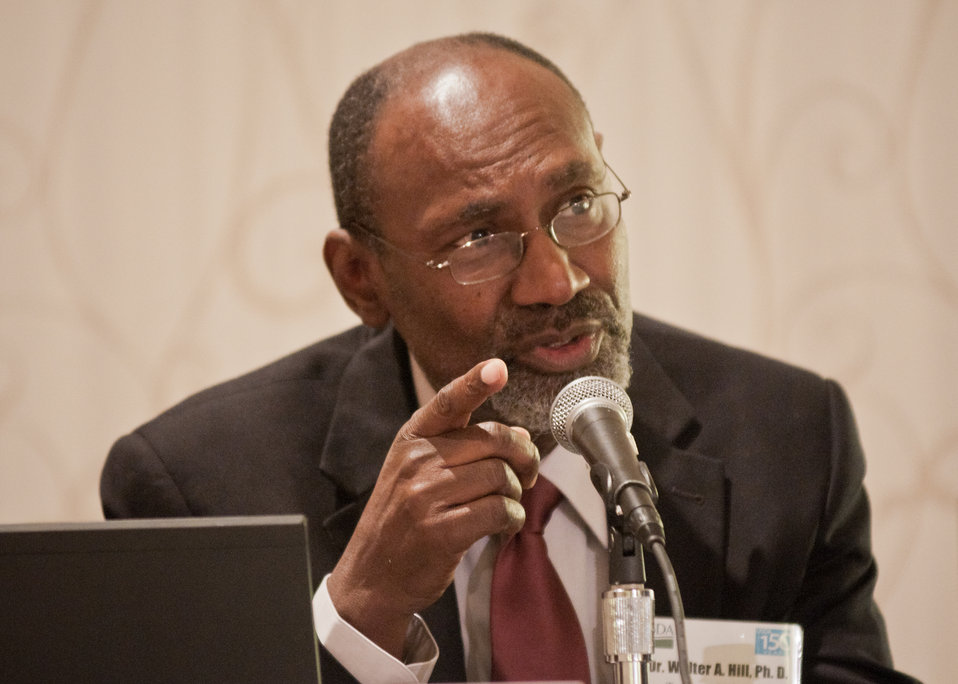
Dr. Walter Hill, Dean, College of Agricultural, Environmental and Natural Sciences/Director, George Washington Carver Agricultural Experiment Station, Tuskegee University, Tuskegee, Alabama spoke during the breakout session Innovative Solutions for Meeting the Challenges of Small and Disadvantaged Farmers at the 2012 Agricultural Outlook Forum, “Moving Agriculture Forward, Growing, Innovating and Celebrating 150 Years” held at the Crystal gateway Marriott Hotel Arlington, Virginia, Friday, February 24, 2012. The session illustrated the important role small and beginning farmers and ranchers have in agriculture.